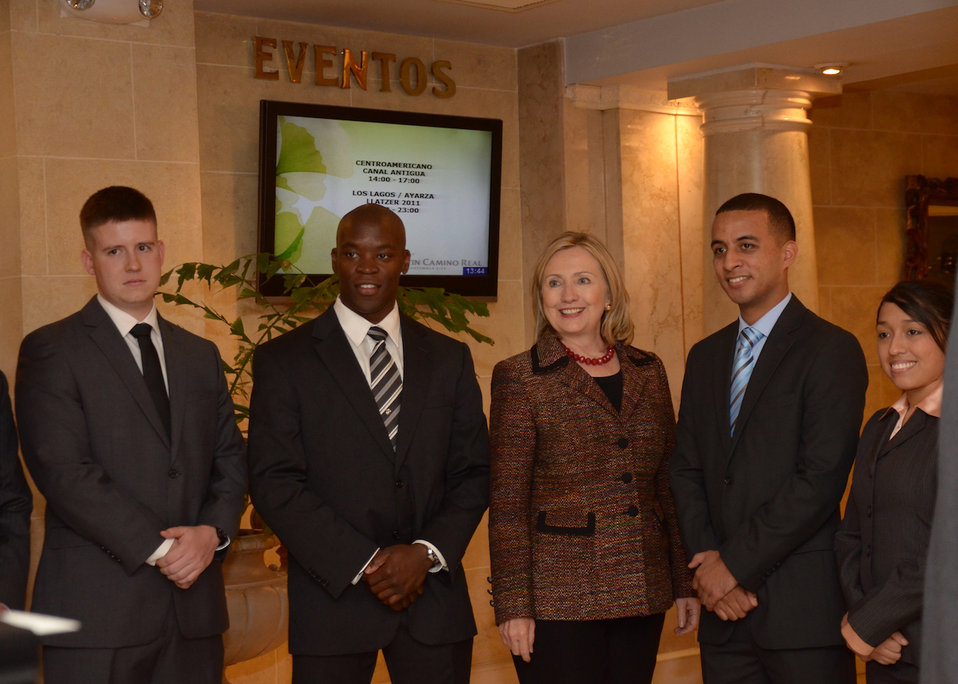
Secretary Clinton Is Greeted By U.S. Marines

U.S. Secretary of State Hillary Rodham Clinton is greeted by U.S. Marines stationed in Guatemala on June 22, 2011, in Guatemala City, Guatemala.